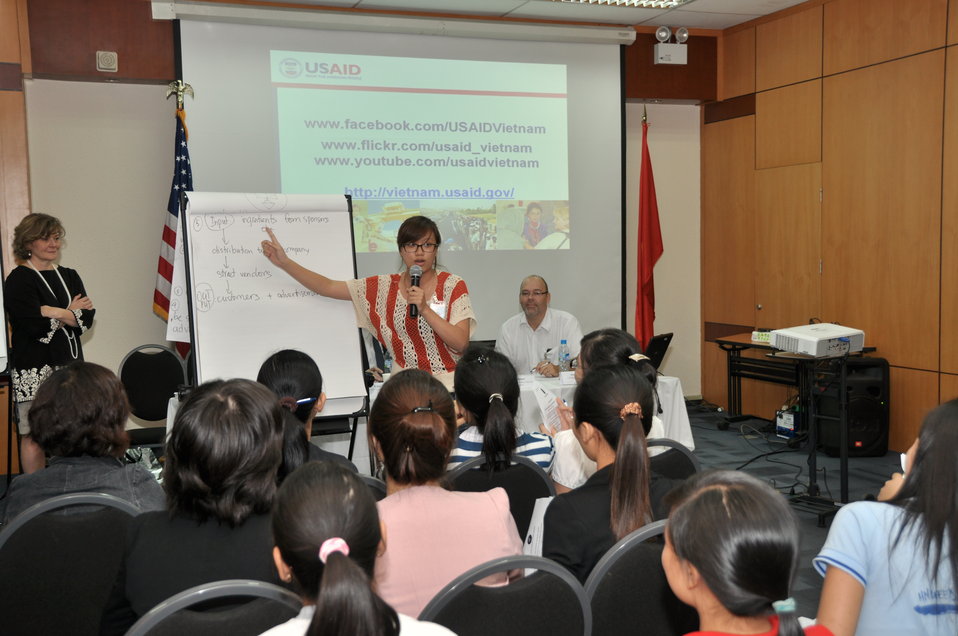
Vietnamese university students join the Business Plan Mashup exercise

Photo: @USAIDVietnam, November 16, 2012